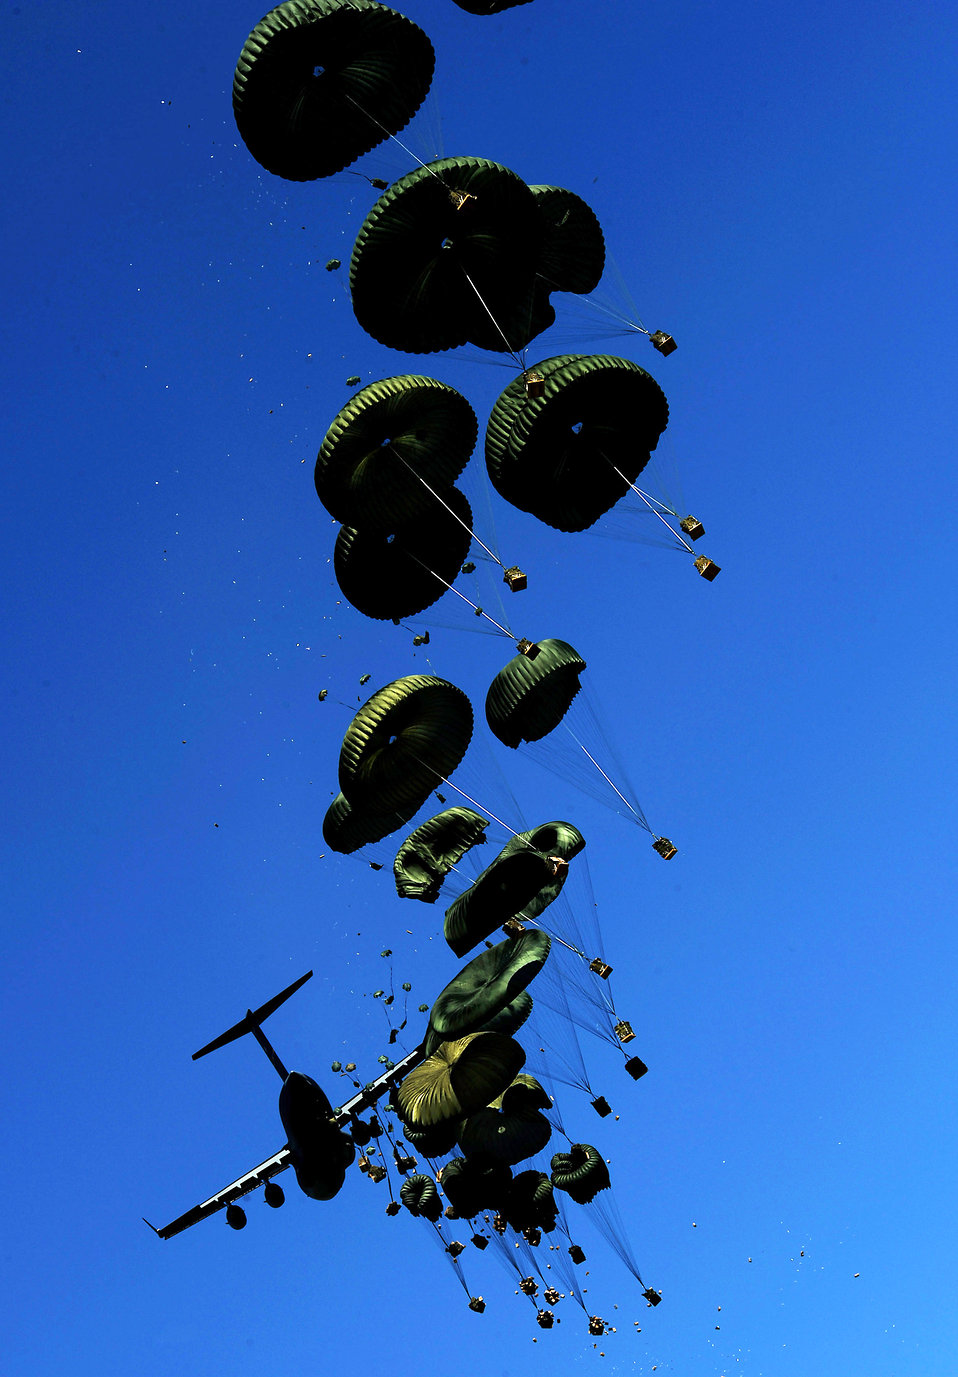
Airmen airdrop relief supplies to Haitians

A Charleston Air Force Base, S.C., C-17 Globemaster III airdrops approximately 14,000 bottles of water and 14,500 Meals, Ready to Eat Jan. 23, 2010, to the outlying area of Port-au-Prince, Haiti. Several Charleston AFB air delivery missions have been conducted to assist in the Haiti relief effort following the earthquake that hit the city Jan. 12, 2010.